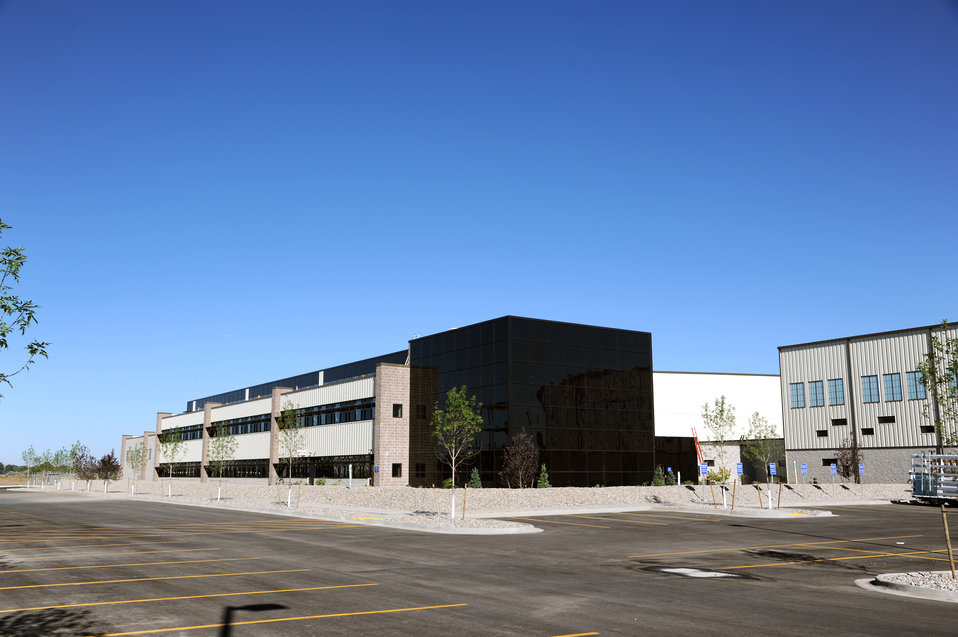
Idaho National Laboratory's Energy Systems Laboratory.

The facility will provide work space and tools to principal investigators that conduct research and development to reduce technical and economic risks associated with the deployment of new energy technologies.